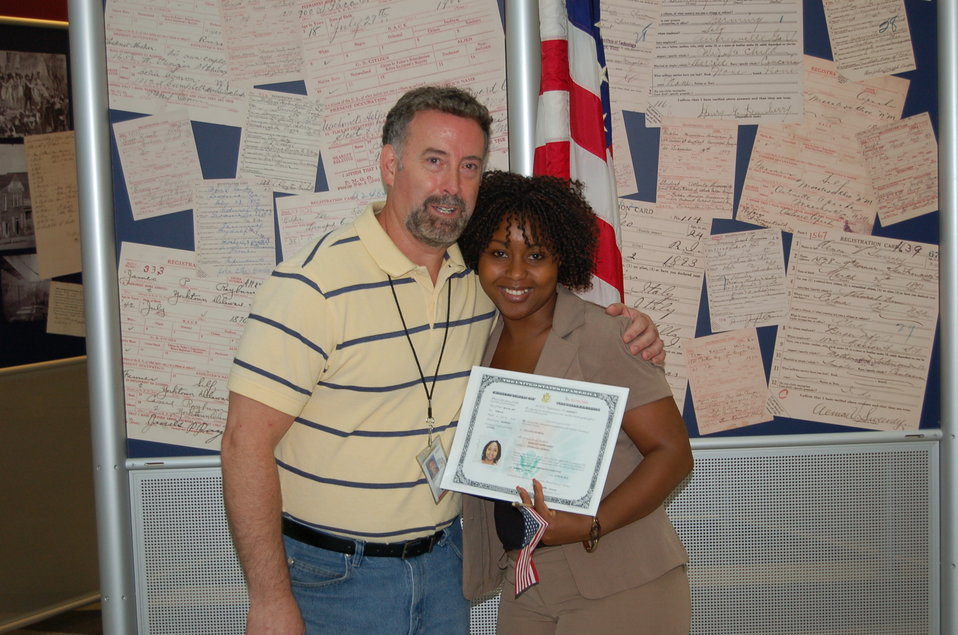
New Citizens